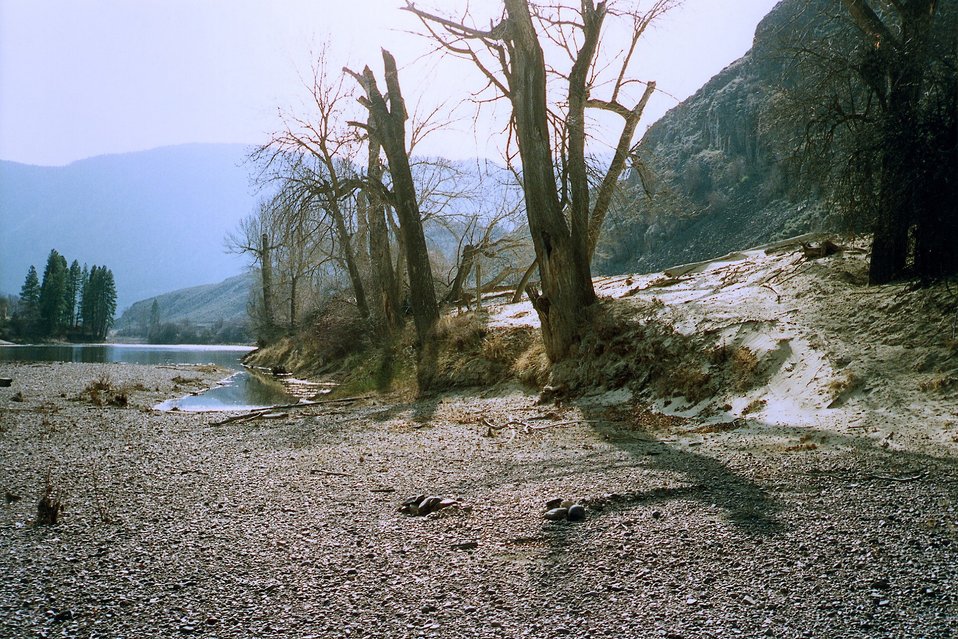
AML. Kaaba-Texas Mine tailings.